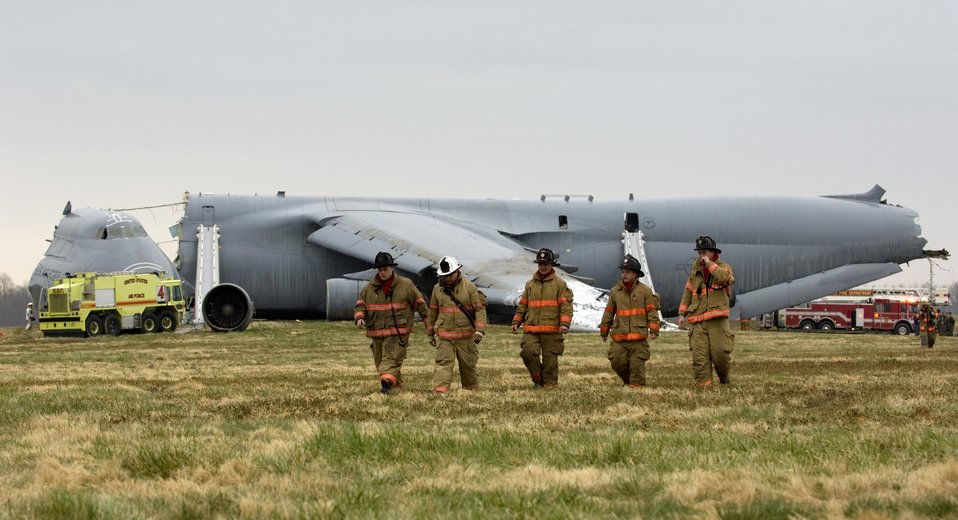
C-5 Galaxy crashes at Dover AFB

Emergency responders are on the scene of a C-5 Galaxy crash today, April 3, 2006 at Dover Air Force Base, Del.